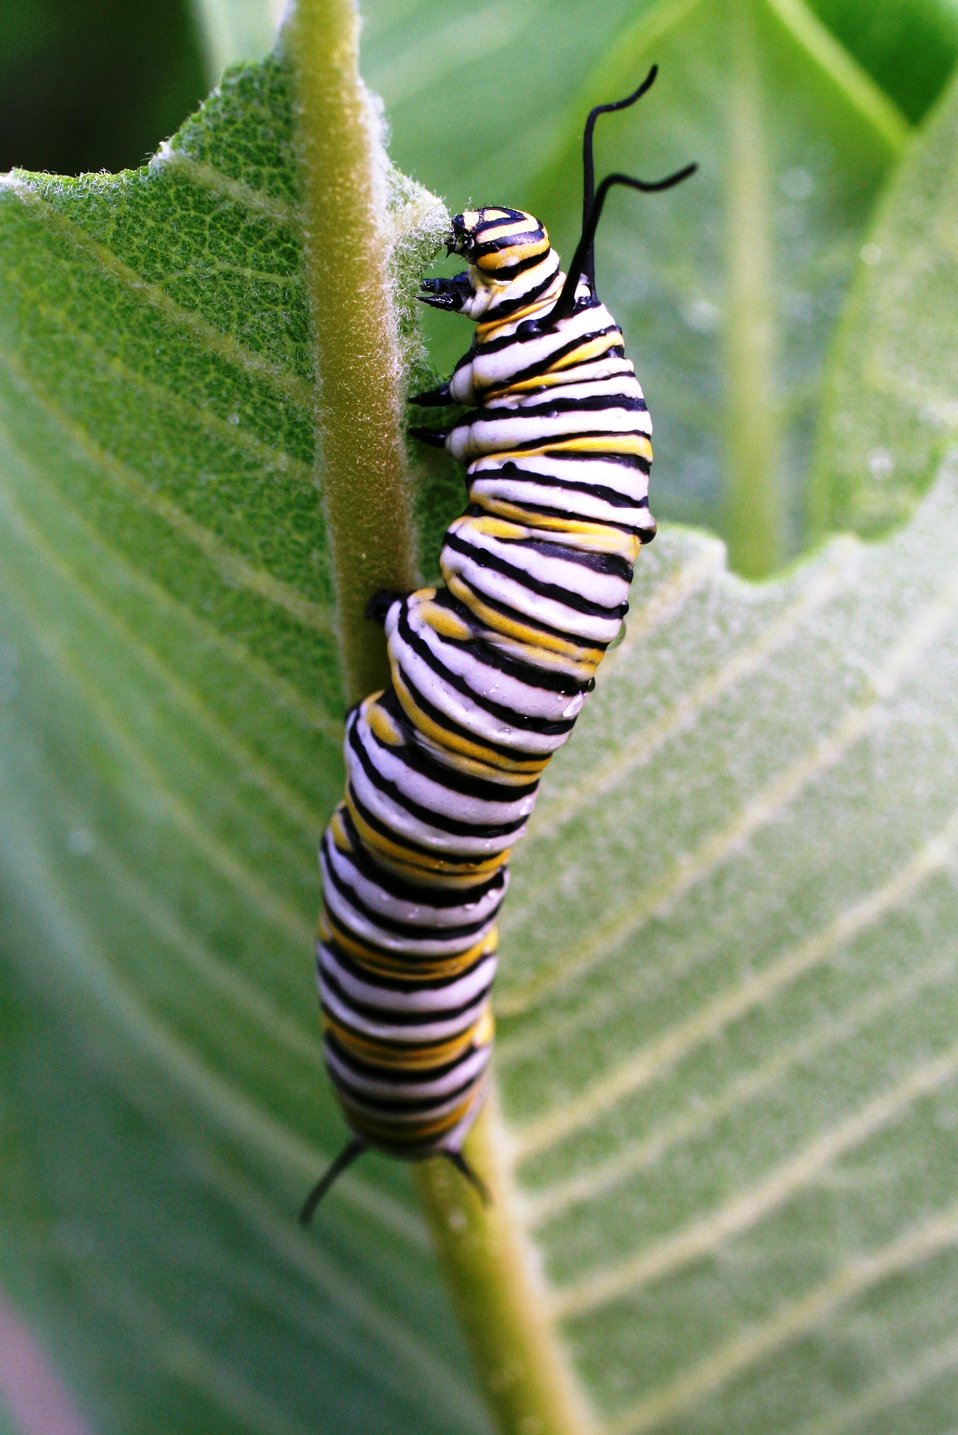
Monarch caterpillar

Monarch larve (caterpillar) eating butterfly leaf.